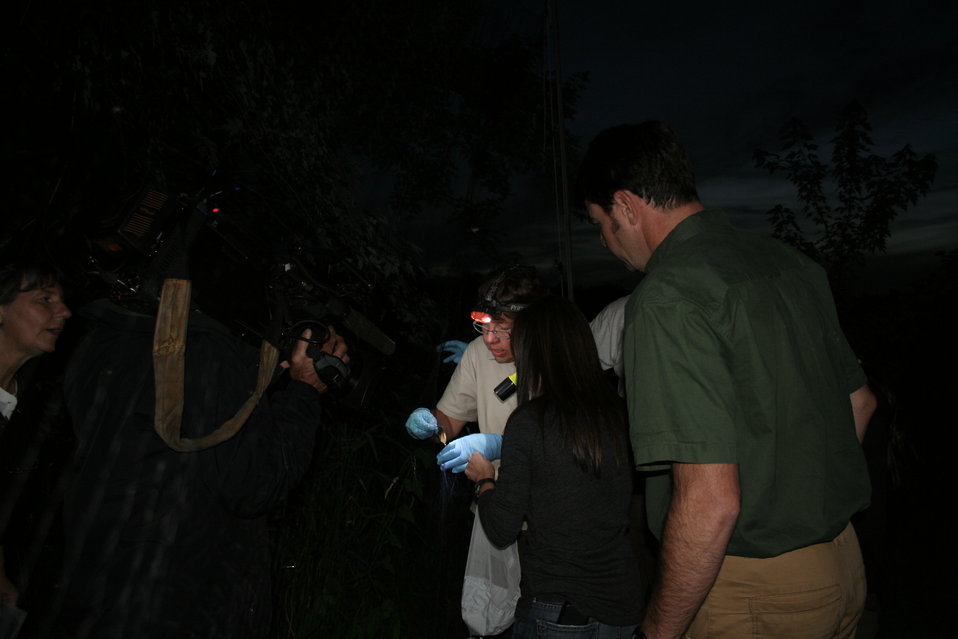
CBS News filming bat capture

CBS News Anchorwoman Betty Nguyen and VT DFW Commissioner Patrick Berry look on as USFWS endangered species biologist Susi von Oettingen inspects a little brown bat.